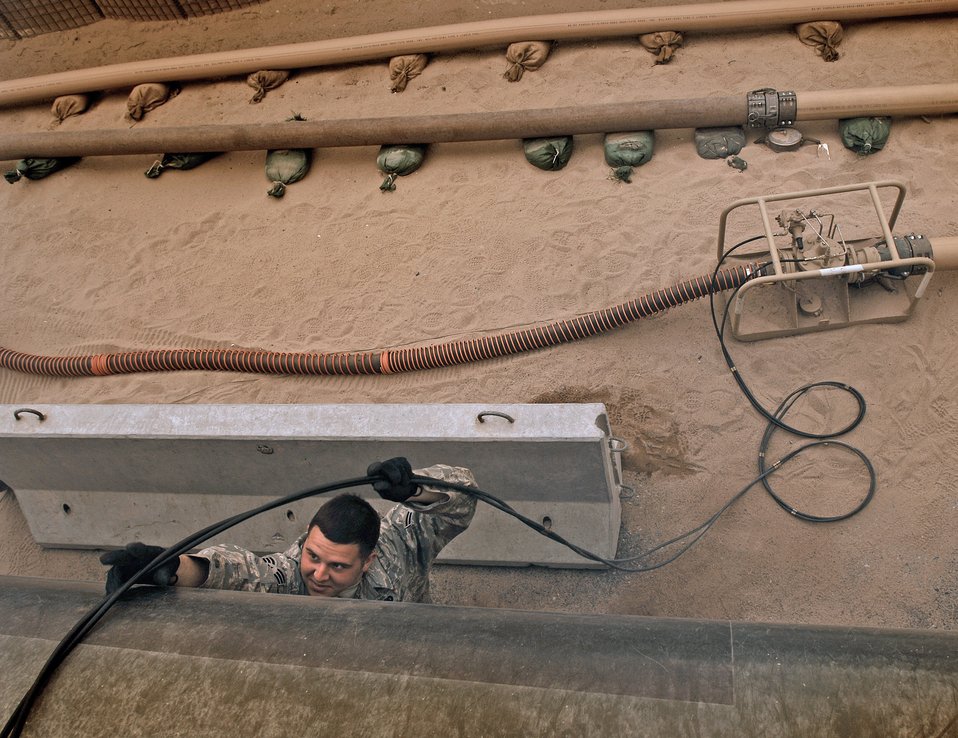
Fueled to fight

Senior Airman Bryan Gallagher prepares to pump fuel from the ramp bladder storage into an R-11 fuel truck Feb. 26 in Southwest Asia. The fuels management flight is responsible for inventorying the fuel daily, and the transfer and issue of fuel to both vehicle operators and aircrews in support of operations Enduring Freedom and Iraqi Freedom. Airman Gallagher is a fuels technician from the 386th Expeditionary Logistics Readiness Squadron.